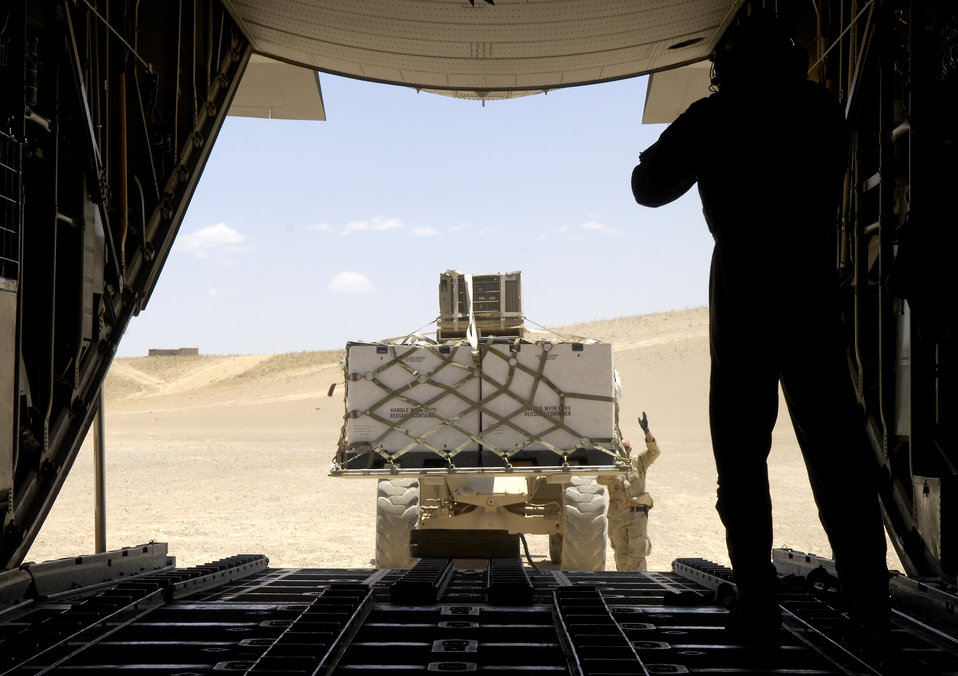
Hercules lifts off

A forklift loads cargo onto a C-130 Hercules on a dirt runway in Tarin Kowt, Afghanistan, on Wednesday, June 14. The Hercules is with the 774th Expeditionary Airlift Squadron, the only U.S. C-130 squadron in Afghanistan. The squadron flies approximately five missions a day providing airlift and airdrops to troops in theater.